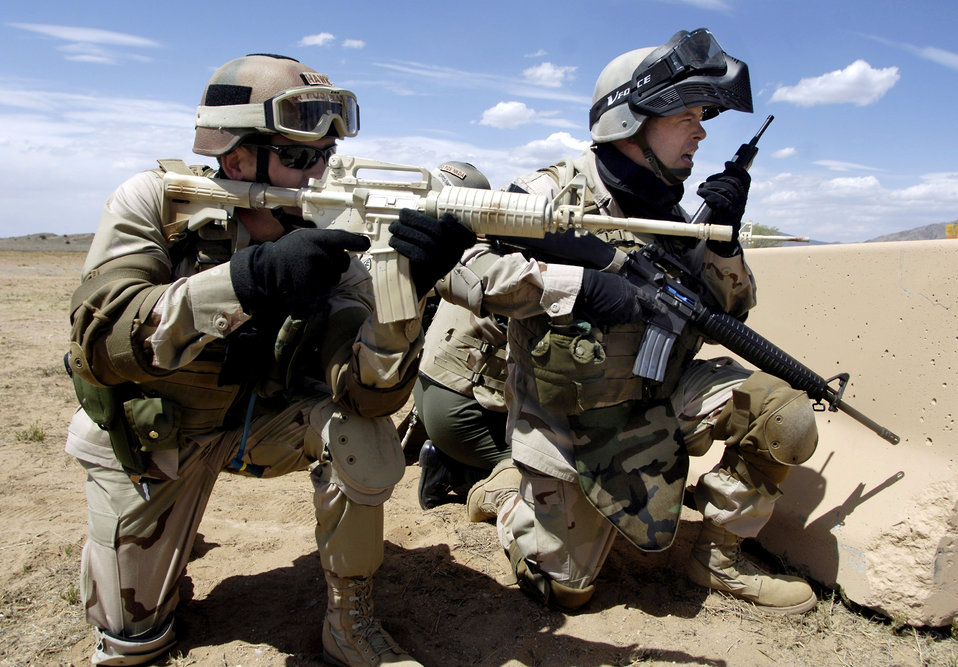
Combat skills training

Second Lt. J.T. Hawk (left) and Master Sgt. William Peterson respond to a